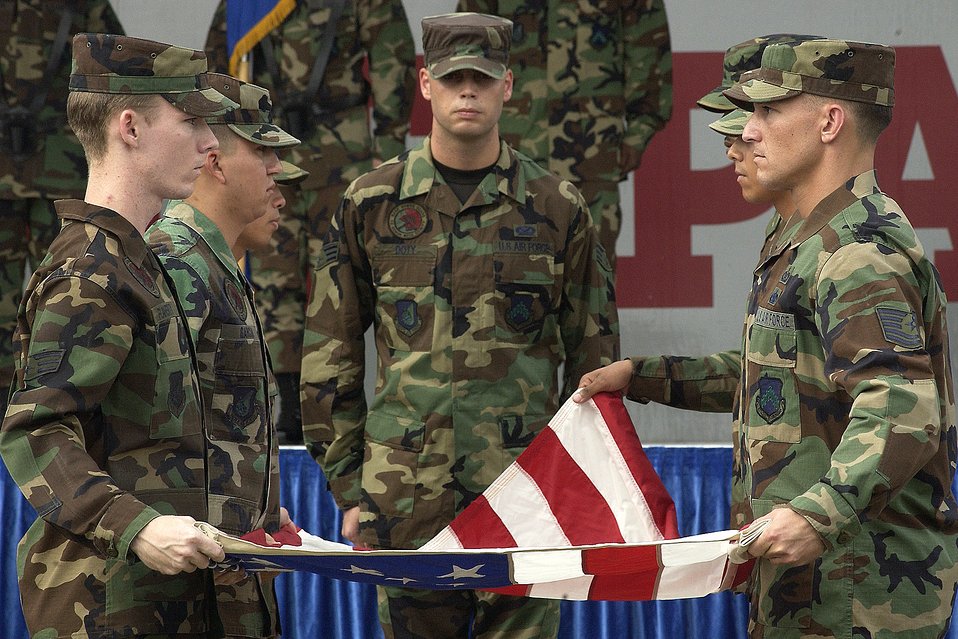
POW/MIA Recognition

The American Flag is folded by members of the 8th Fighter Wing during the Prisoner of War and Missing in Action Ceremony Sept. 21 at Kunsan Air Base, South Korea. Sept. 21 is National POW/MIA Recognition Day.